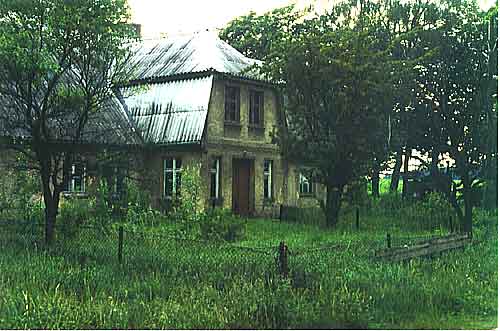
Polski: Modrolas Deutsch: Ehemaliges Gutshaus in Madelatz (), Woiwodschaft Westpommern, Polen